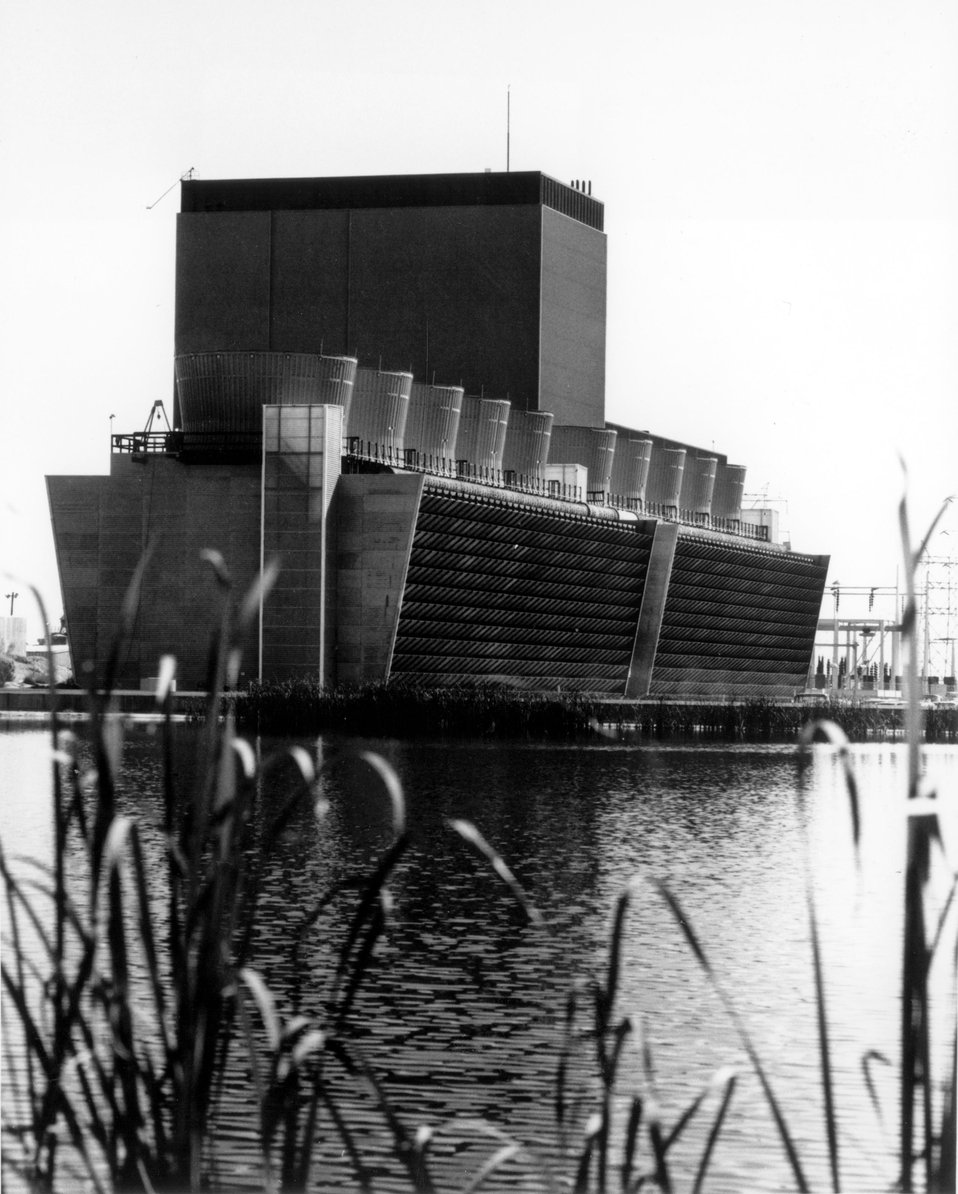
Cooling tower at the Public Service Company.